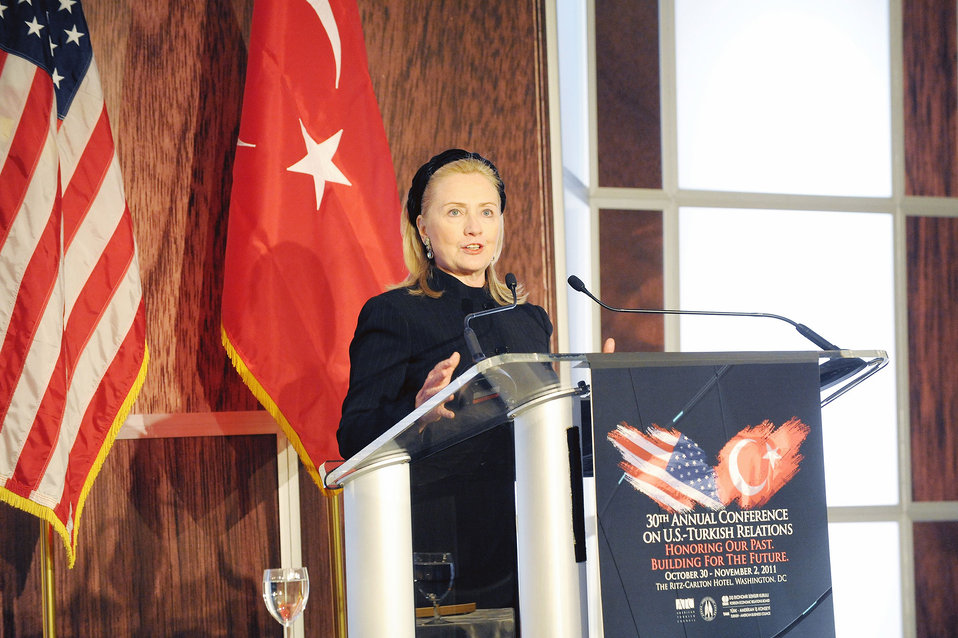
Secretary Clinton Delivers Remarks at 2011 Annual Conference on U.S.-Turkey Relations

U.S. Secretary of State Hillary Rodham Clinton delivers keynote remarks at the 2011 Annual Conference on U.S.-Turkey Relations, hosted by the American-Turkish Council, in Washington, D.C., on October 31, 2011.